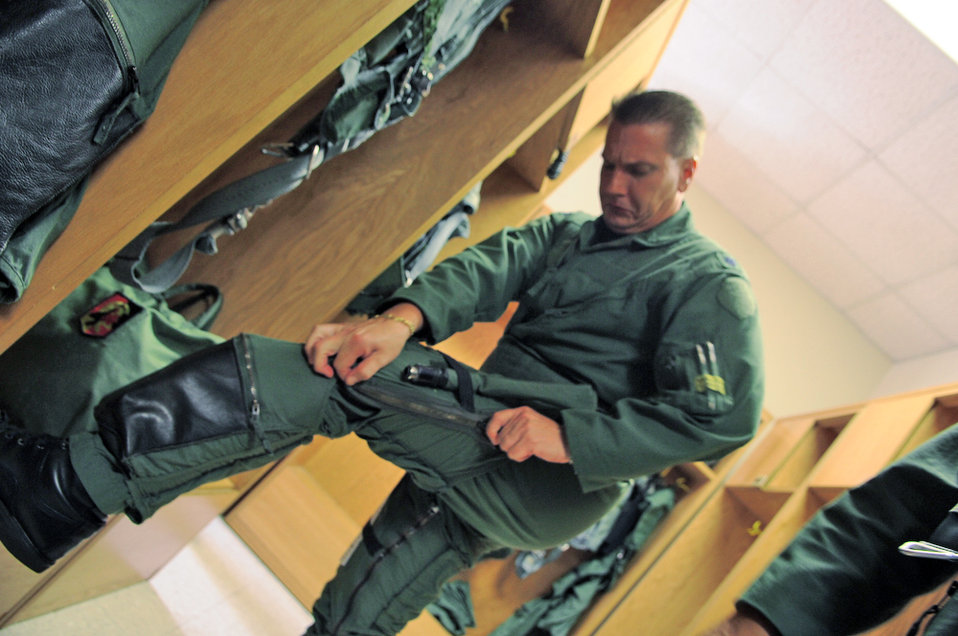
Final Training Mission for F-15 at Hickam

Lt. Col. Mark Ladtkow zips up his flight suit before conducting his last F-15 training mission Aug. 25, 2010 at Joint Base Pearl Harbor-Hickam, Hawaii . The 199th Air National Guard unit is transitioning from the F-15 to the F-22 Raptor. Colonel Ladtkow is an F-15 Eagle pilot with the 199th Fighter Squadron.